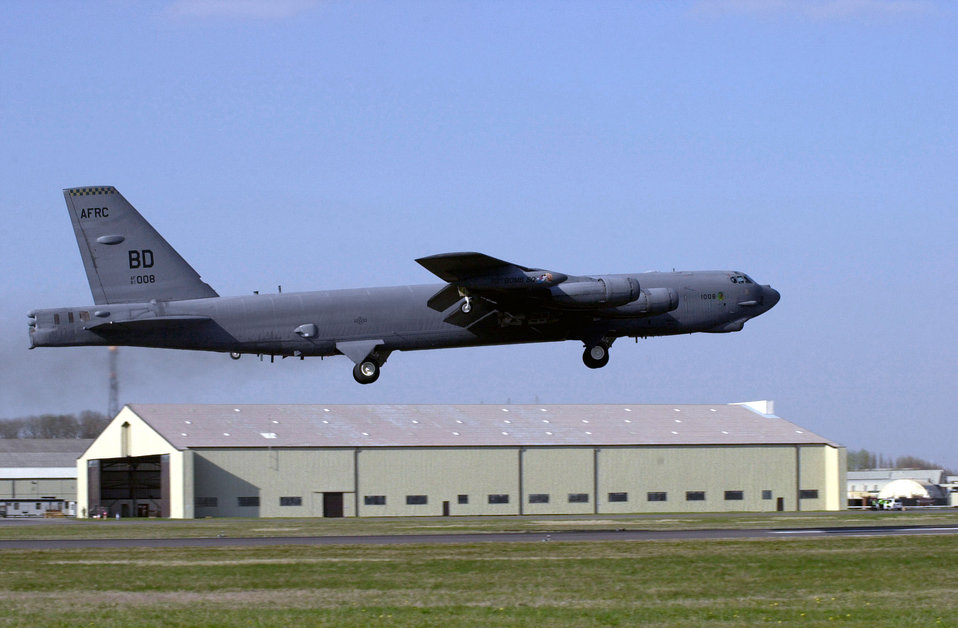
Lightening pod

OPERATION IRAQI FREEDOM -- A B-52 Stratofortress takes off on a unique mission with new equipment, April 7, 2003. The mission they are preparing for will be the first